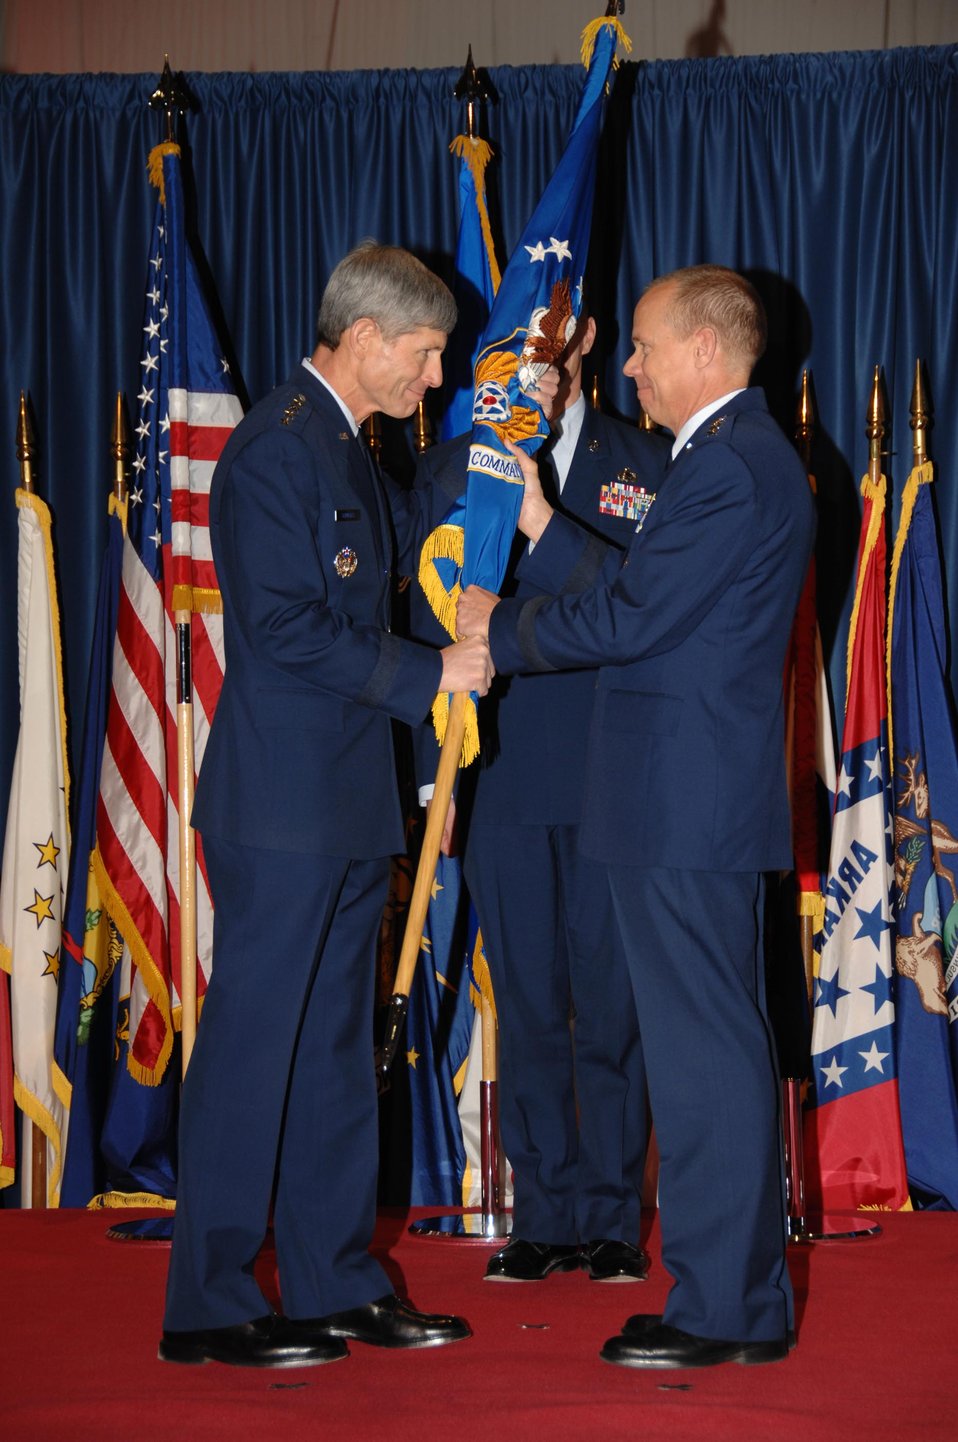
AFMC change of command

In the time-honored military tradition signifying assumption of command, Air Force Chief of Staff Gen. Norton Schwartz passes the Air Force Materiel Command guidon, or unit flag, to Gen. Donald Hoffman. General Hoffman assumed command of AFMC Nov. 21 in a standing-room only ceremony at the National Museum of the U.S. Air Force at Wright-Patterson Air Force Base, Ohio, attended by a host of Air Force senior leaders.